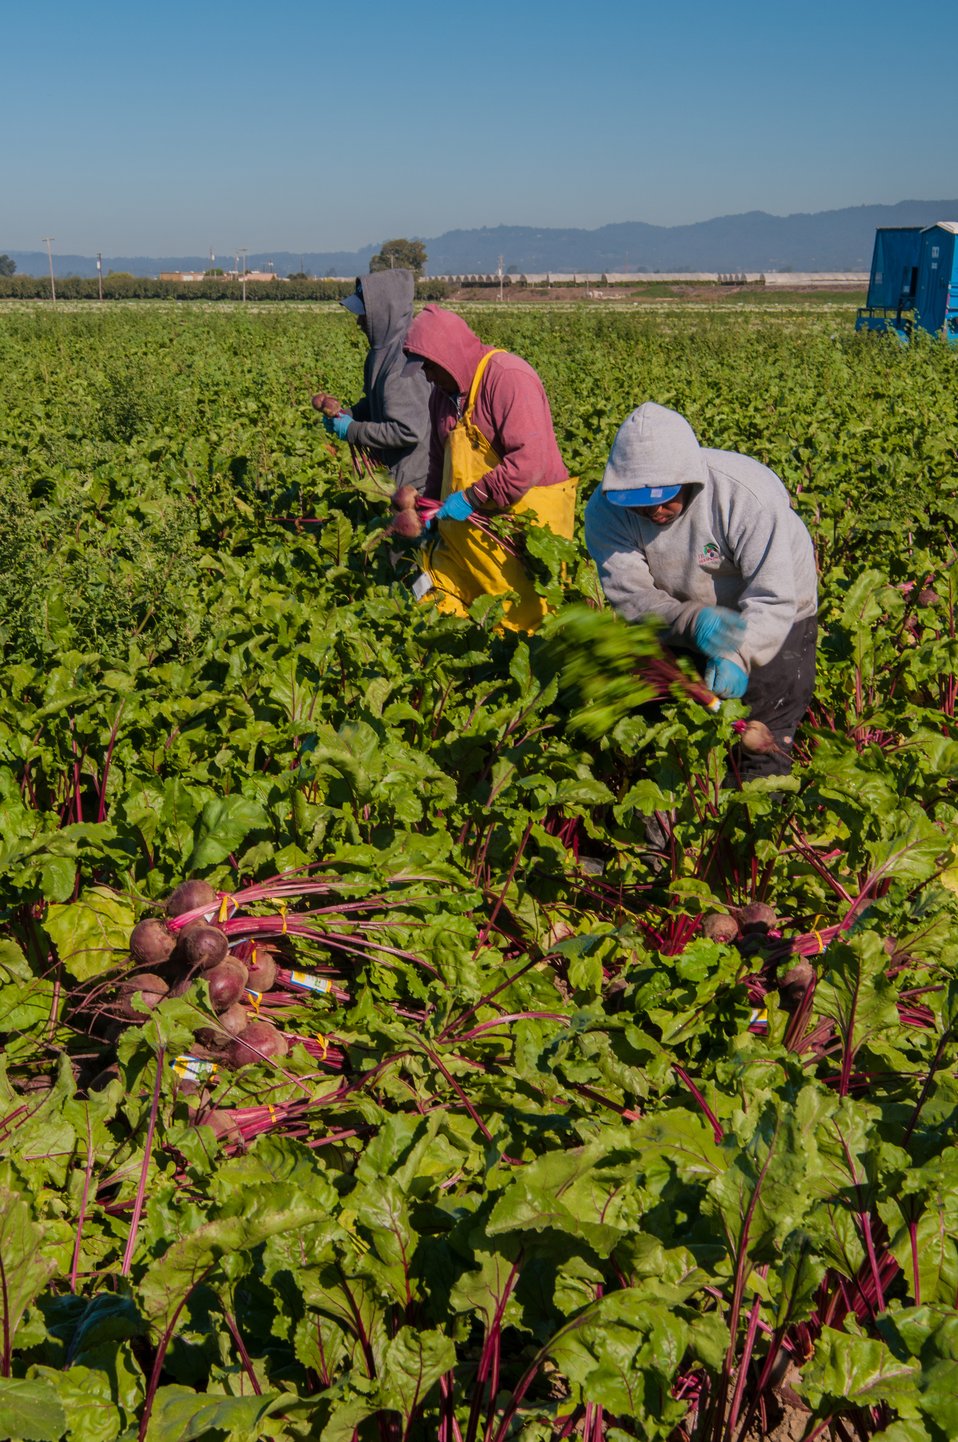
Migrant workers harvest Beets at Lakeside Organic Gardens in Watsonville, CA on Tuesday, Aug. 27, 2013.